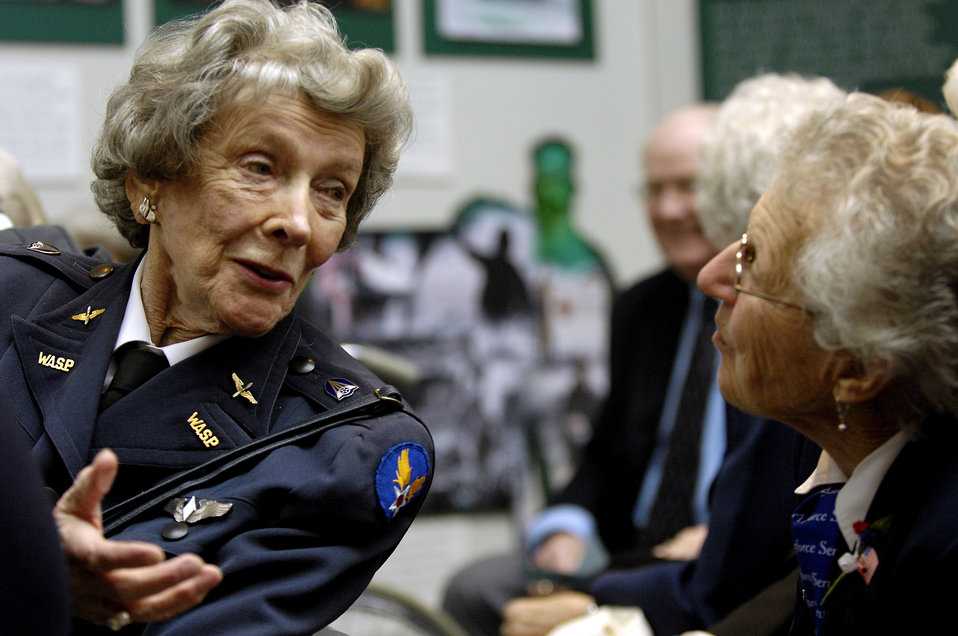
Women fliers honored

Bernice Haydu (left) and Lillian Yonally, Women Airforce Service Pilots, visit while attending an exhibit opening in their honor Nov. 14 at the Women in Military Service for America Memorial in Arlington, Va. Approximately 25 WASP from World War II attended the opening.